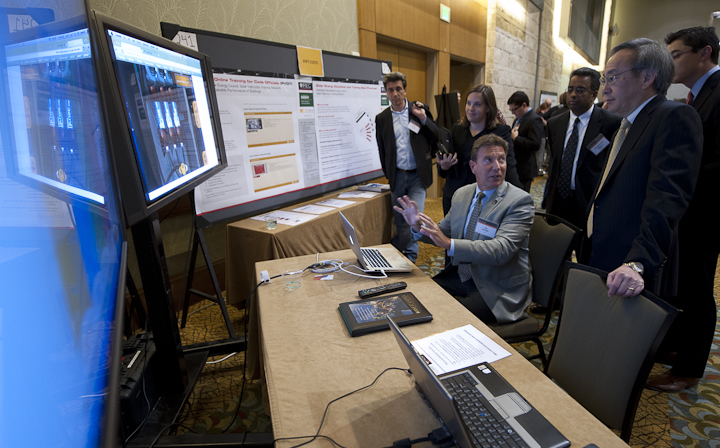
SunShot Tech Tour

June 13, 2012- Steven Chu, Secretary of Energy, U.S. Department of Energy looks at new technology with exhibitor Joe Sarubbi, seated, at the Technology Forum at the SunShot Grand Challenge Summit and Technology Forum in Denver, Colorado.